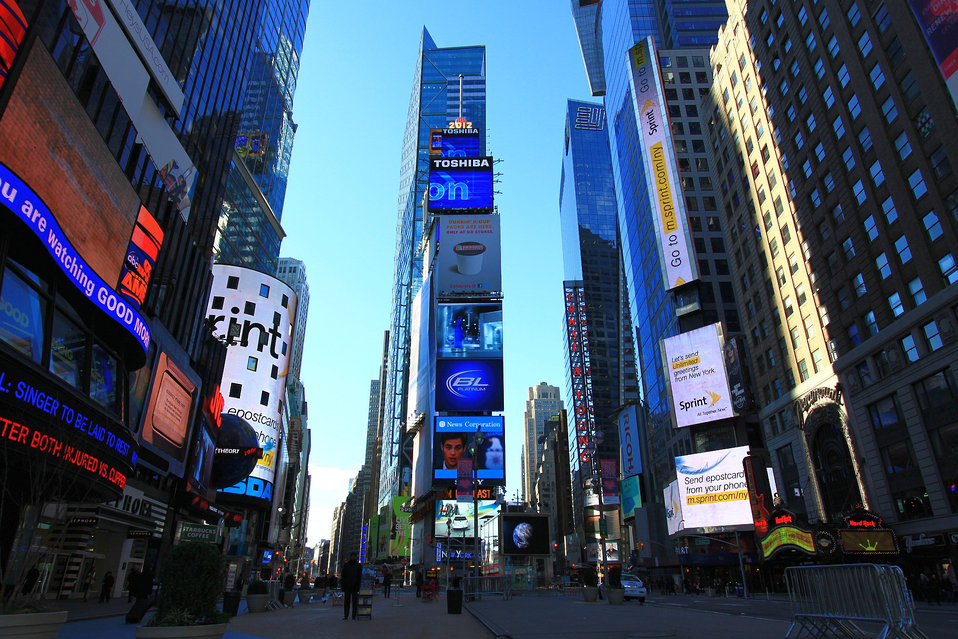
Times square

Sunday morning on quiet times sq..